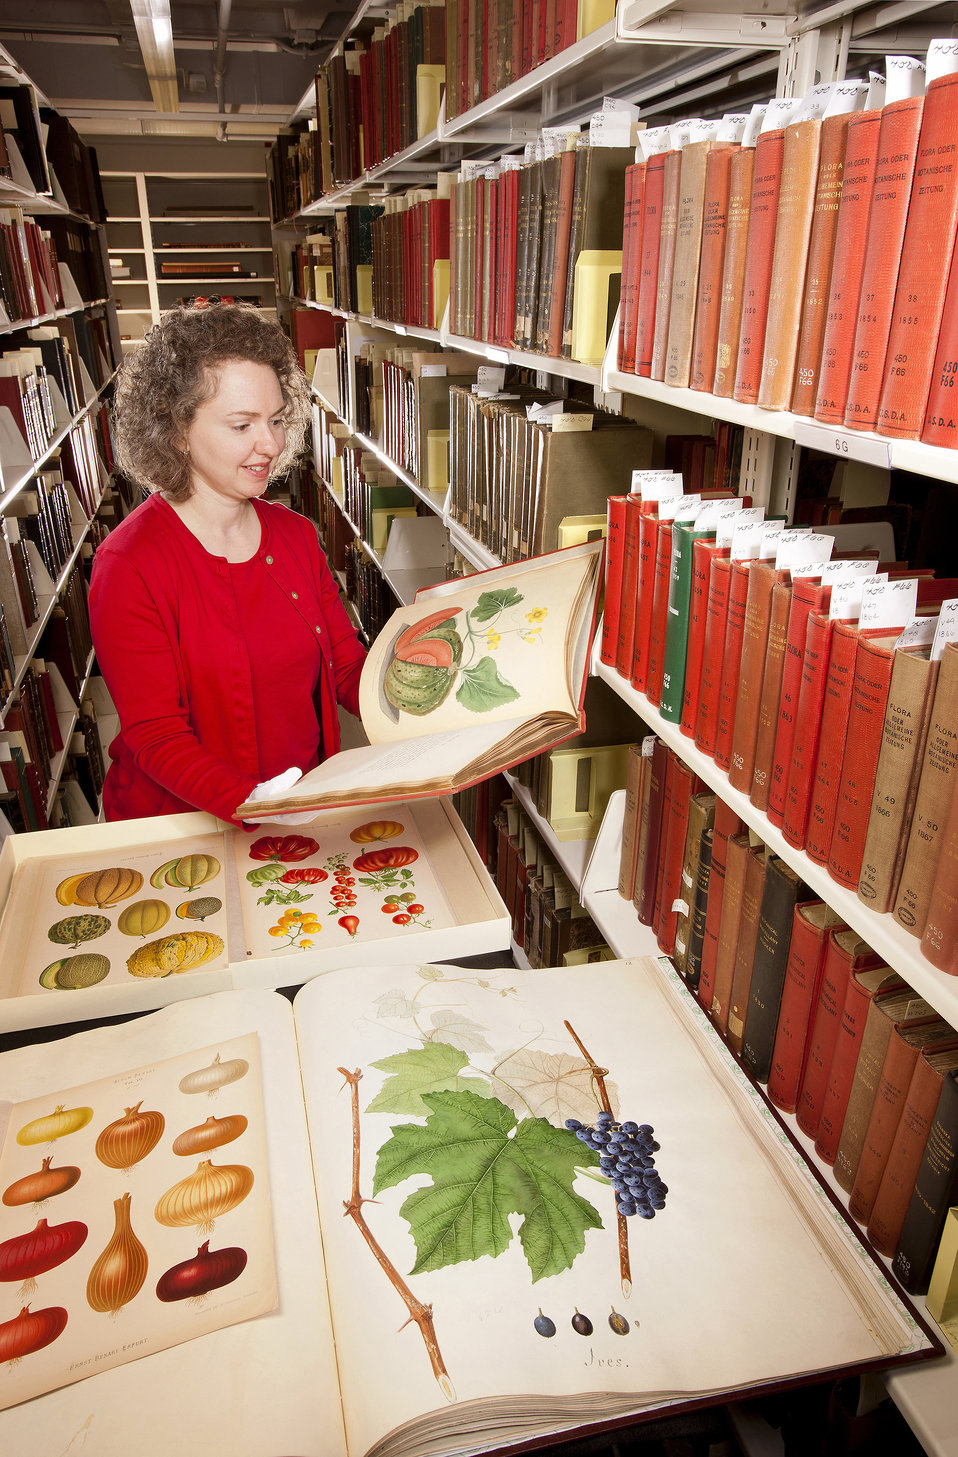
U.S. Department of Agriculture (USDA) Agricultural Research Service (ARS) Special Collections librarian Sara B. Lee selects fruit and vegetable images from the Rare Book Collection at the USDA National Agricultural Library (NAL) in Beltsville, MD on Oct. 4, 2003.